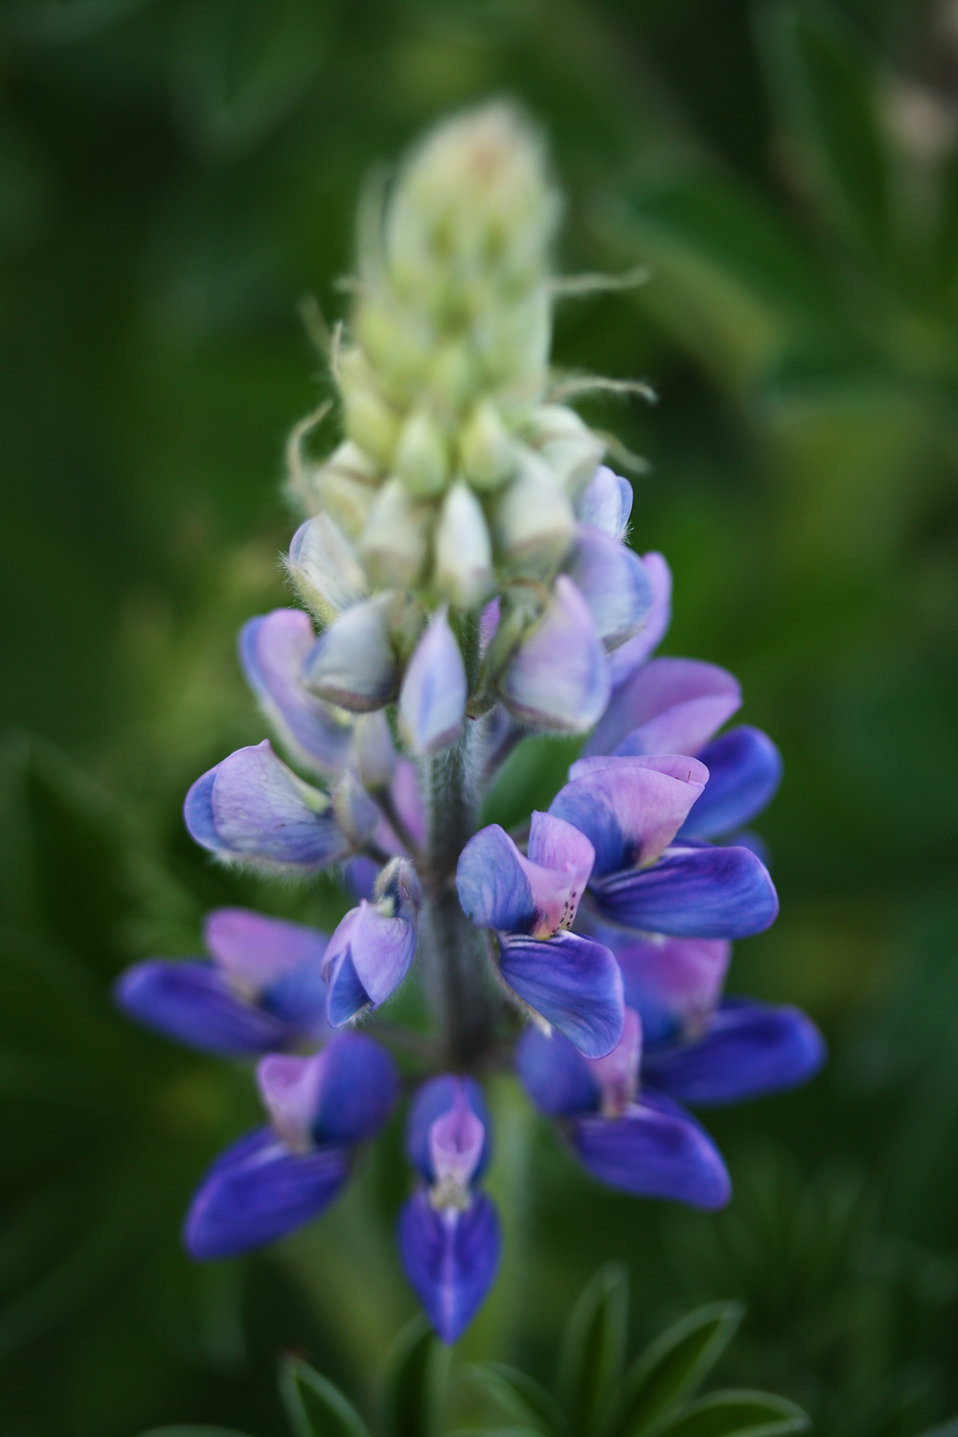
Lupine

Lisa Hupp/USFWS